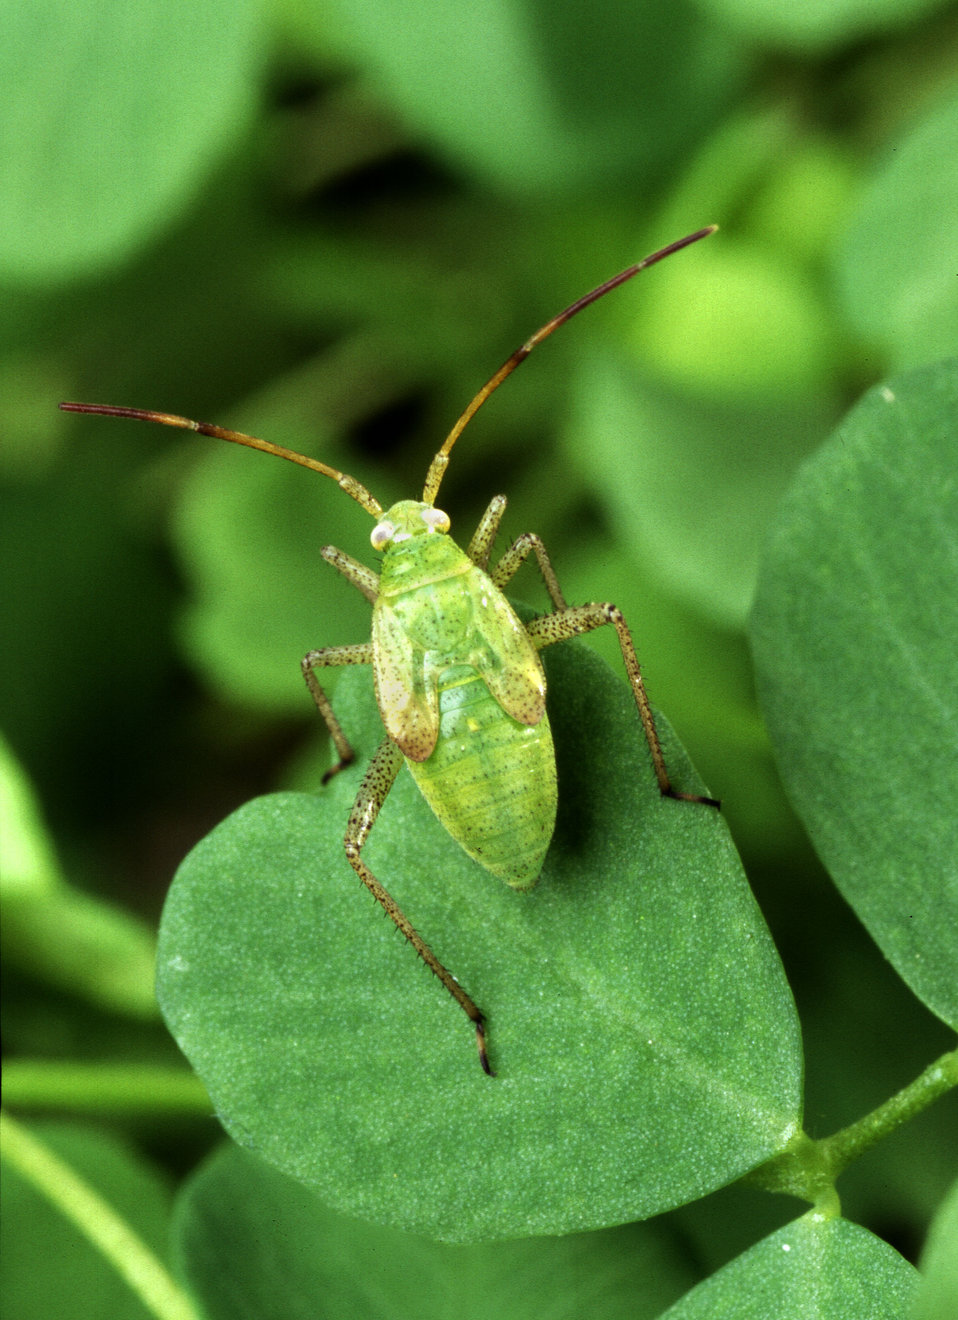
The alfalfa plant bug (Adelphocoris lineolatus) is a non-native plant pest.